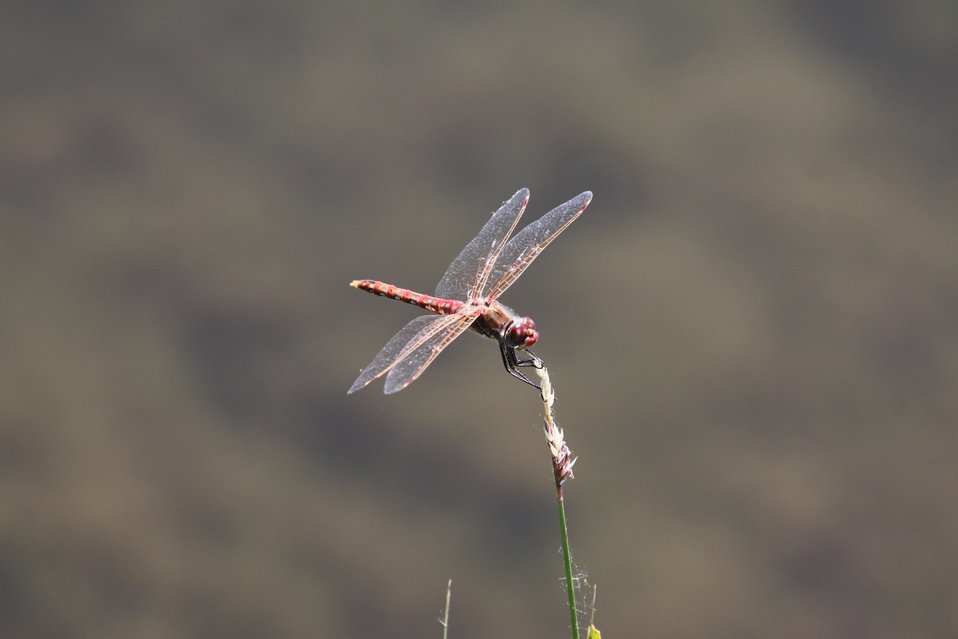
Variegated Meadowhawk

Sympetrum corruptum is a migratory dragonfly (Skimmer family) found from May until October.